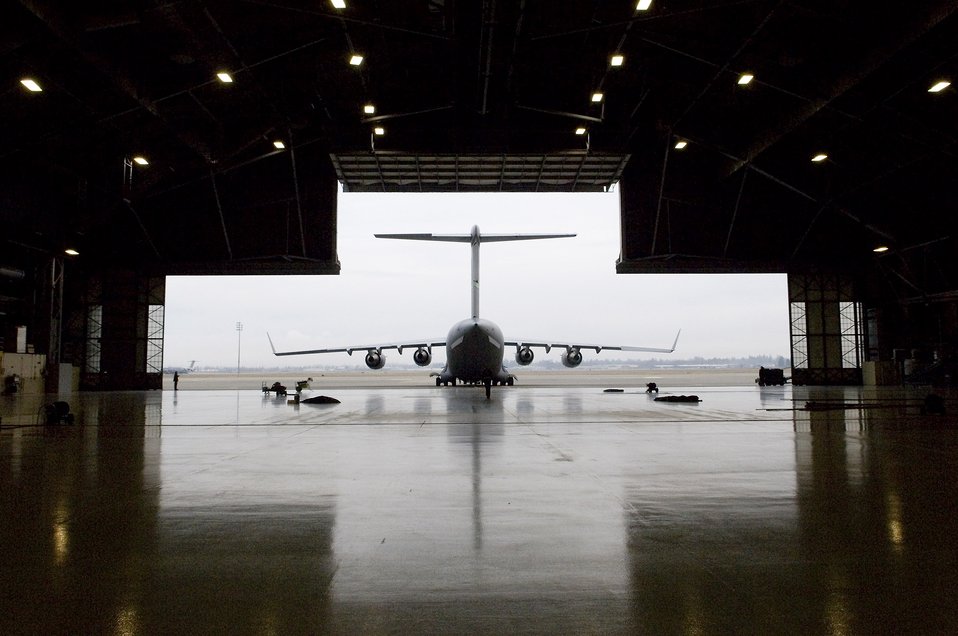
Poised, clean and ready

A C-17 Globemaster III sits outside a hangar after a routine pressure wash and home station check Feb 29 at McChord Air Force Base, Wash.